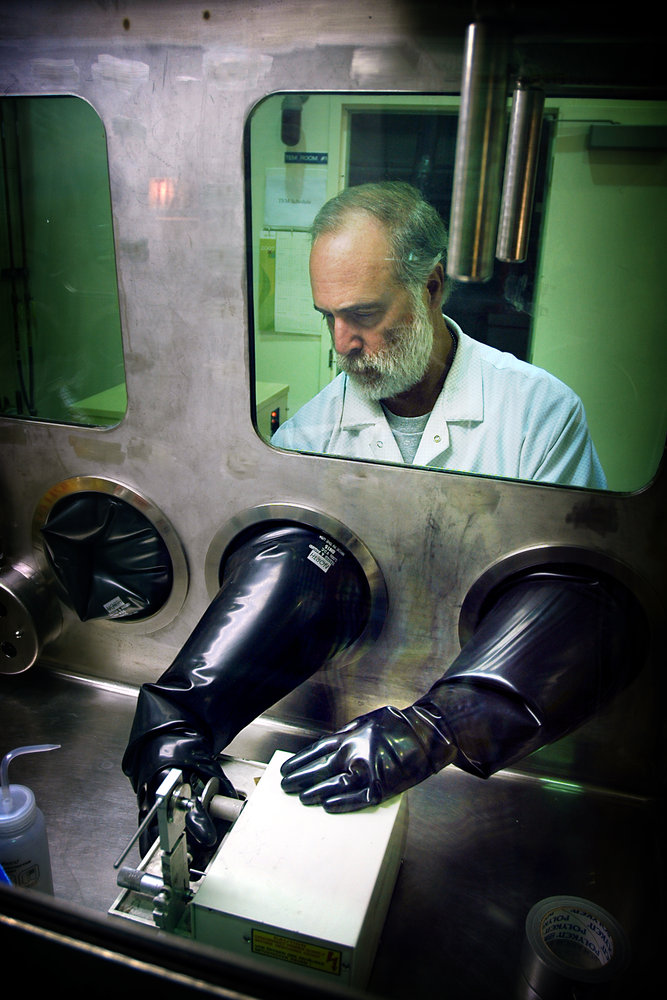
The precautions necessary to protect workers make irradiated fuel sample preparation extremely challenging for researchers at Idaho National Laboratory.